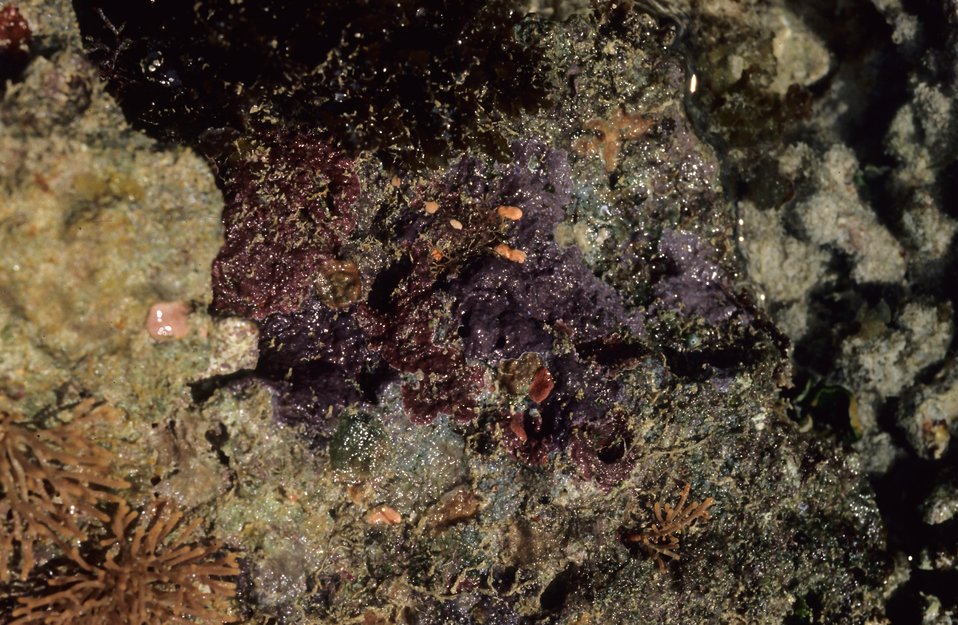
Heron Island. Various intertidal invertebrates.